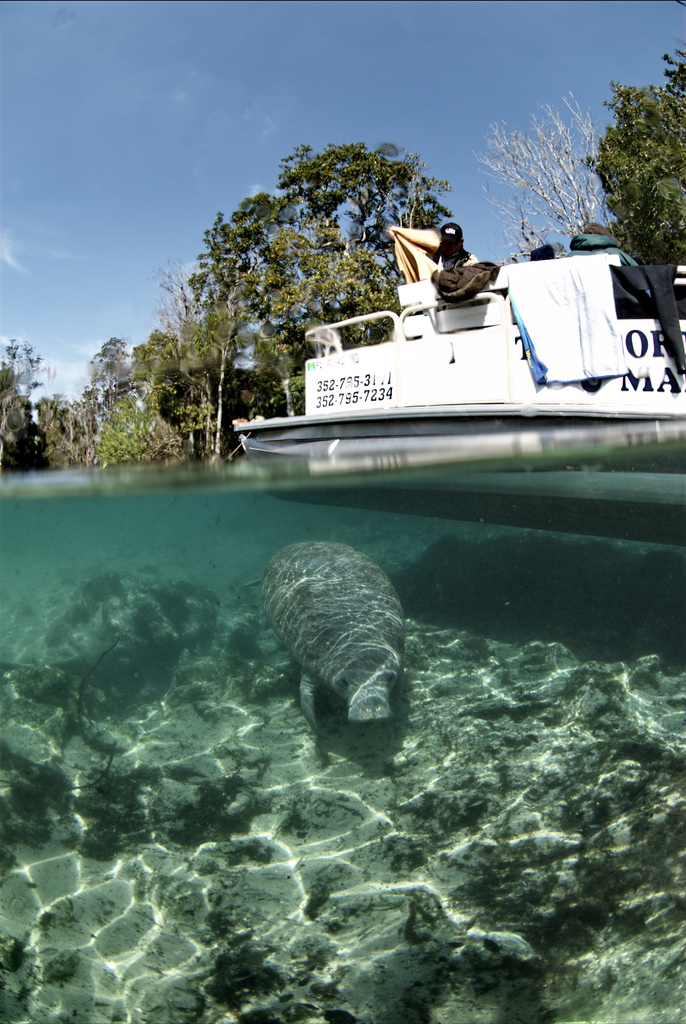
Endangered Florida manatee (Trichechus manatus), Crystal River National Wildlife Refuge

Photo credit: David Hinkel

The Crystal River National Wildlife Refuge, was established in 1983 specifically for the protection of the endangered West Indian Manatee. This unique refuge preserves the last unspoiled and undeveloped habitat in Kings Bay, which forms the headwaters of the Crystal River. The refuge preserves the warm water spring havens, which provide critical habitat for the manatee populations that migrate here each winter.